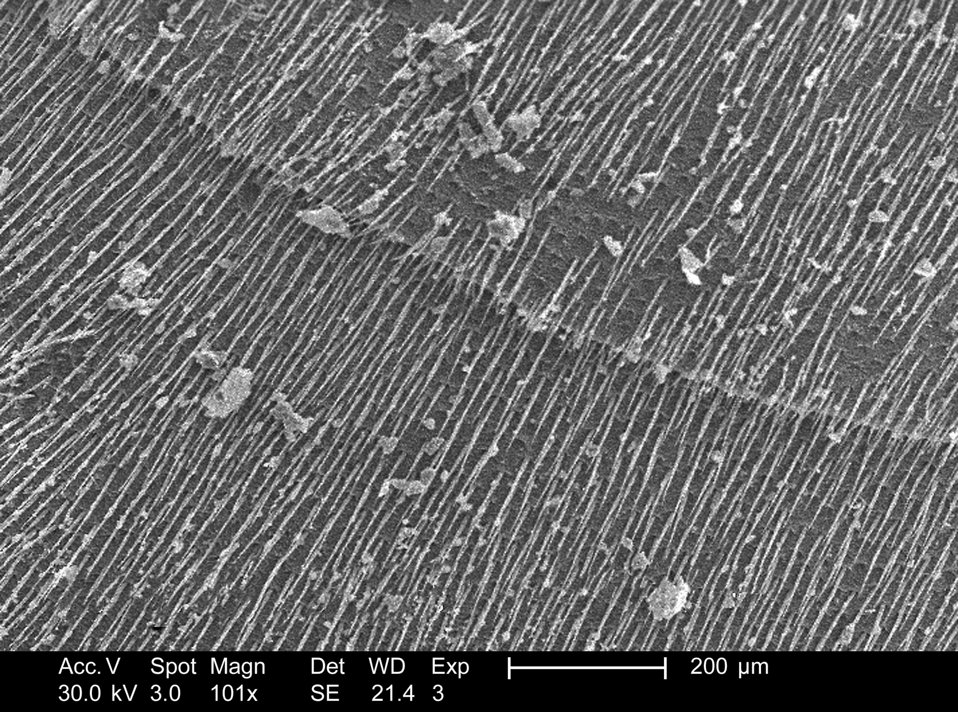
Magnified 101x, this scanning electron micrograph (SEM) revealed that this unidentified wasp's wing bore many sensorial 'hairs', known as 'setae' on its cuticular surface. These hairs are sensitive to changes in the organism's environment including changes in temperature, wind speed and direction, chemical variations, and changes to the physical make-up of its surroundings, i.e., tactile interaction. These setae, along with the insect's antennae, eyes, and wings offer the organism a detailed comprehensive depiction of its immediate environment.